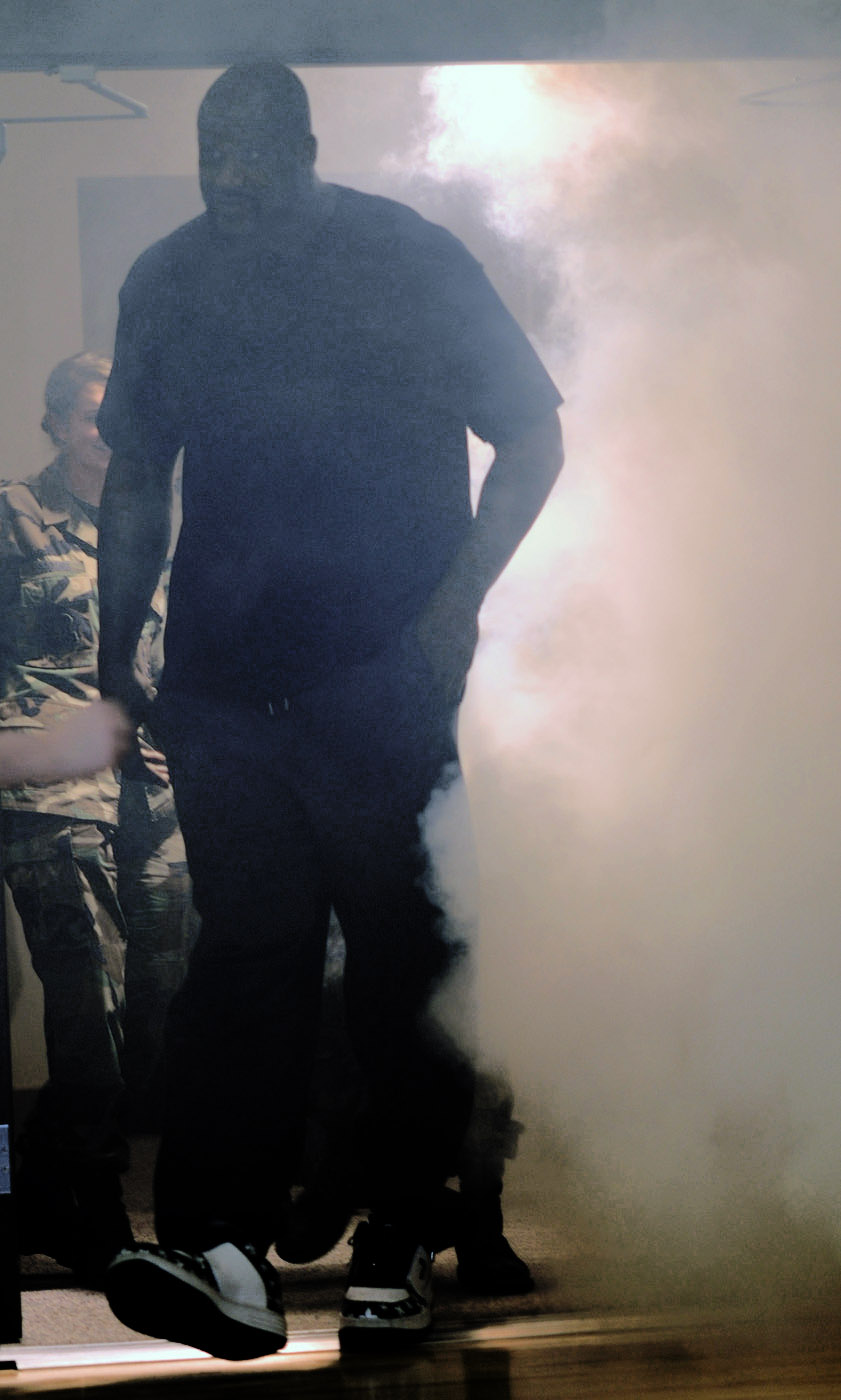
Shaq shares hoops clinic with Buckley children

Shaquille O'Neal of the Phoenix Suns makes his entrance through clouds of smoke to meet more than 265 children of military members during a basketball clinic Jan. 14 at the fitness center on Buckley Air Force Base, Colo.